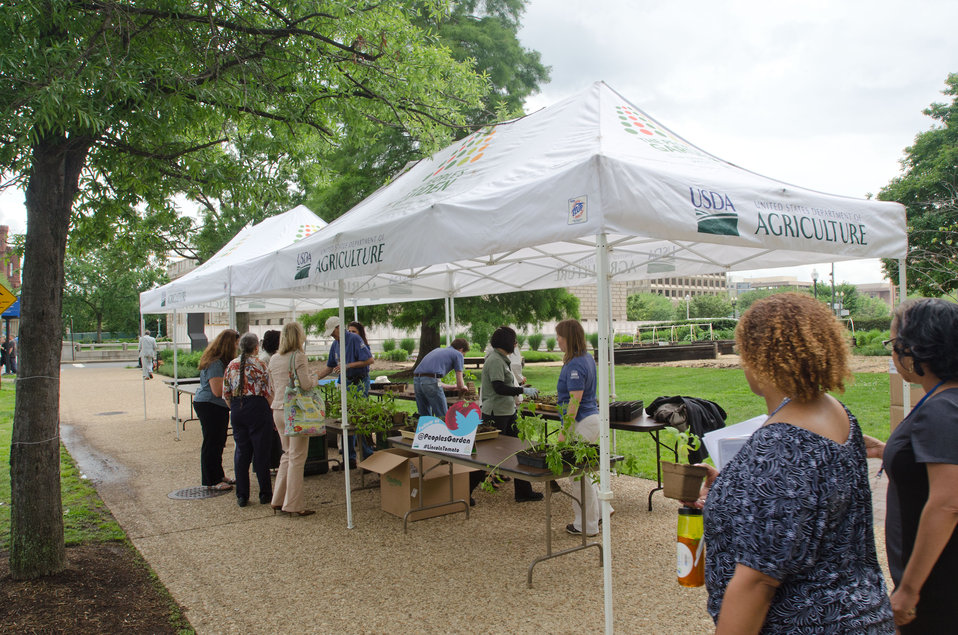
The People’s Garden Initiative and volunteer Executive Master Gardeners distributed ‘Abraham Lincoln” Tomato seedlings to USDA employees in celebration of the 150th Anniversary of the U.S. Department of Agriculture, on Tuesday, May 15, 2012 in Washington, D.C. On this day, 150 years ago, President Abraham signed the Department into existence during the Civil War. In 1923 the H.W. Buckbee seed company of Rockford, Illinois introduced an heirloom variety named in honor of Illinois’ Greatest Son – Abraham Lincoln. The plant produces large beefsteak tomatoes in about 90 days. Volunteer Executive Master Gardeners planted and cultivated more that 3,000 seedlings ranging in size from one inch to more than a foot tall, so people could choose the best ones to transport home and to stagger the harvest by selecting a small and large seedling. One of the hopes of this event is to share the joys of gardening and harvesting, as well as the opportunity to share your harvest in your community. Seed packets are being distributed to People’s Gardens worldwide.